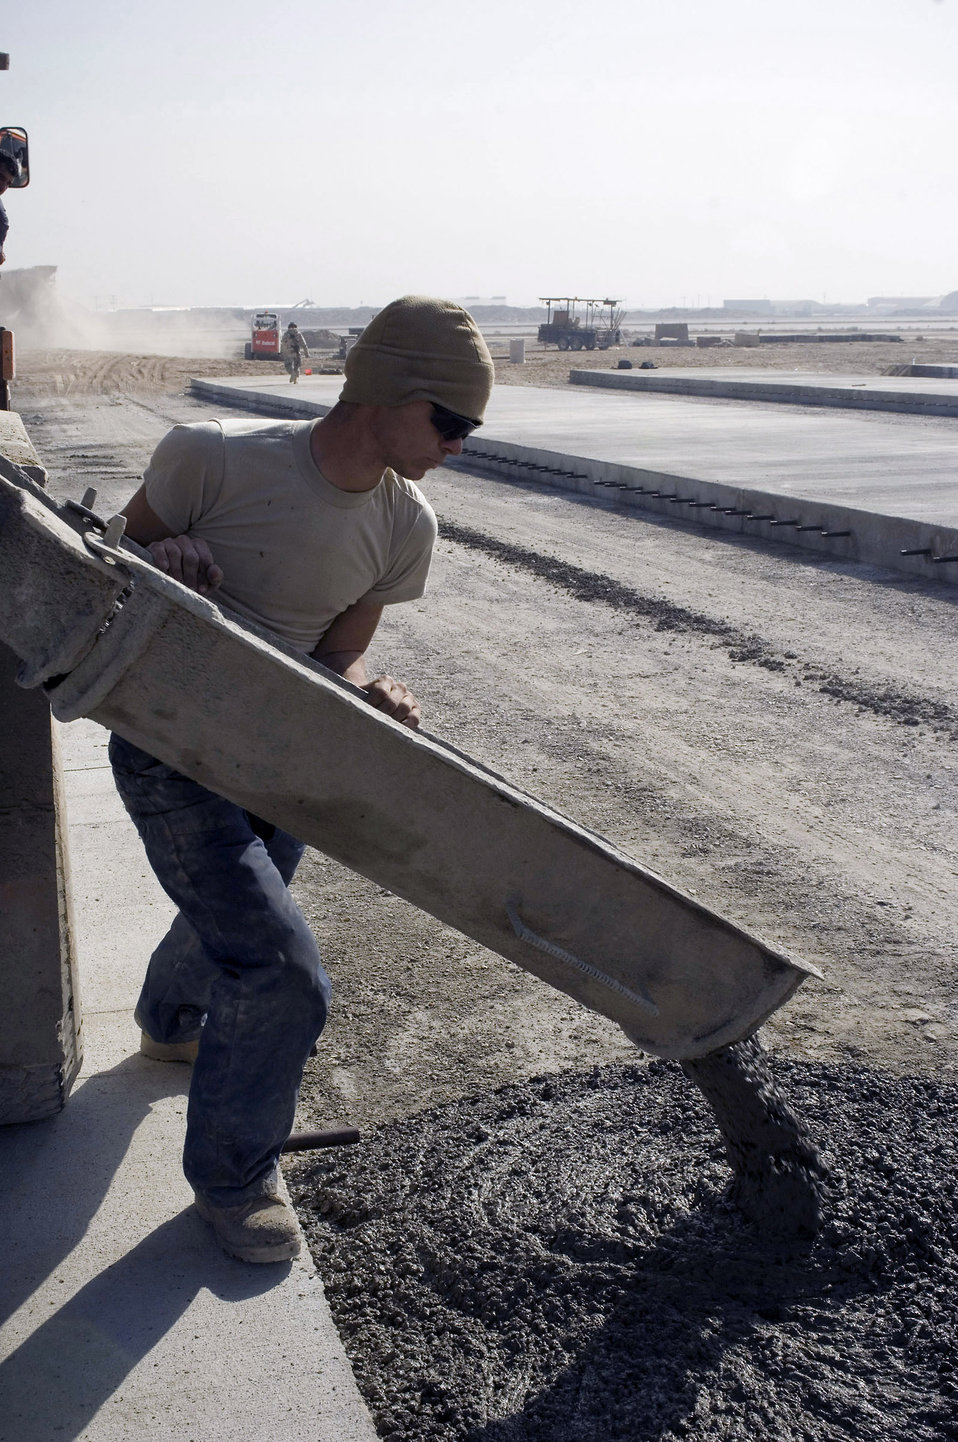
Civil engineer crews improve Bagram infrastructure

Airman 1st Class Christopher Gaudette pours concrete from a truck on the flightline Nov. 25 at Bagram Airfield, Afghanistan. Since August, members of the 455th ECES poured more than 2,075 cubic meters of concrete as part of construction projects designed to expand the airfield. Airman Gaudette is assigned to the a 455th Expeditionary Civil Engineer Squadron and deployed from Pope Air Force Base, N.C.